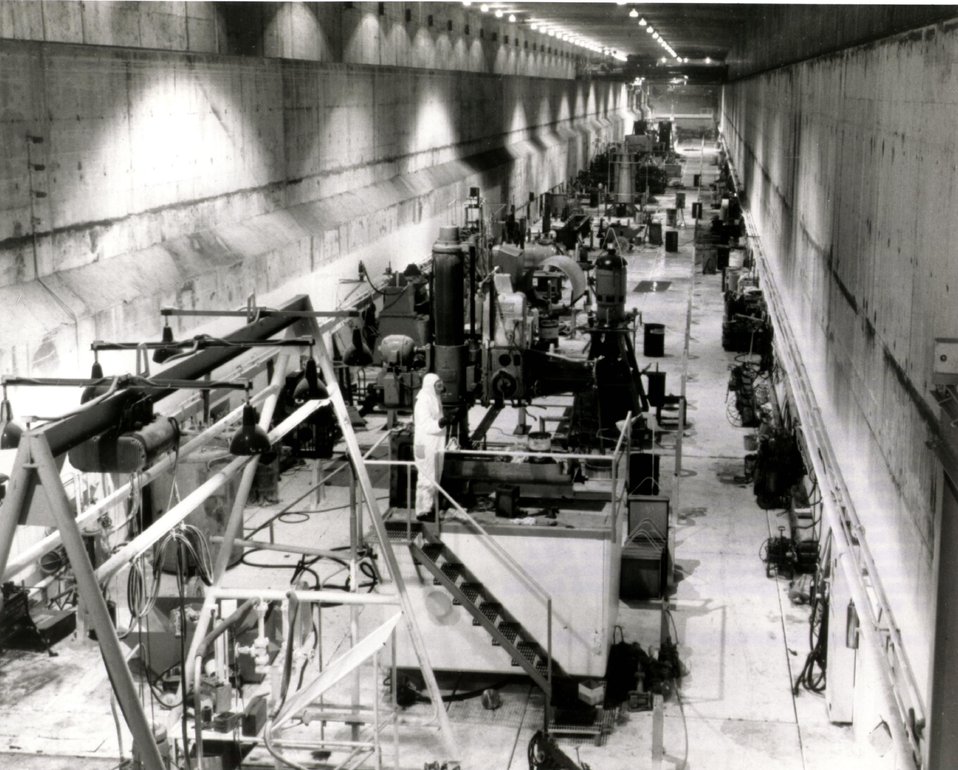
Nuclear equipment valued at more than a million dollars was decontaminated in 1965, a record year, in this facility now operated by Atlantic Richfield Hanford Company at the AEC's Hanford complex near Richland, Washington. View is of the canyon floor portion of the former chemical separations plant. c.1968